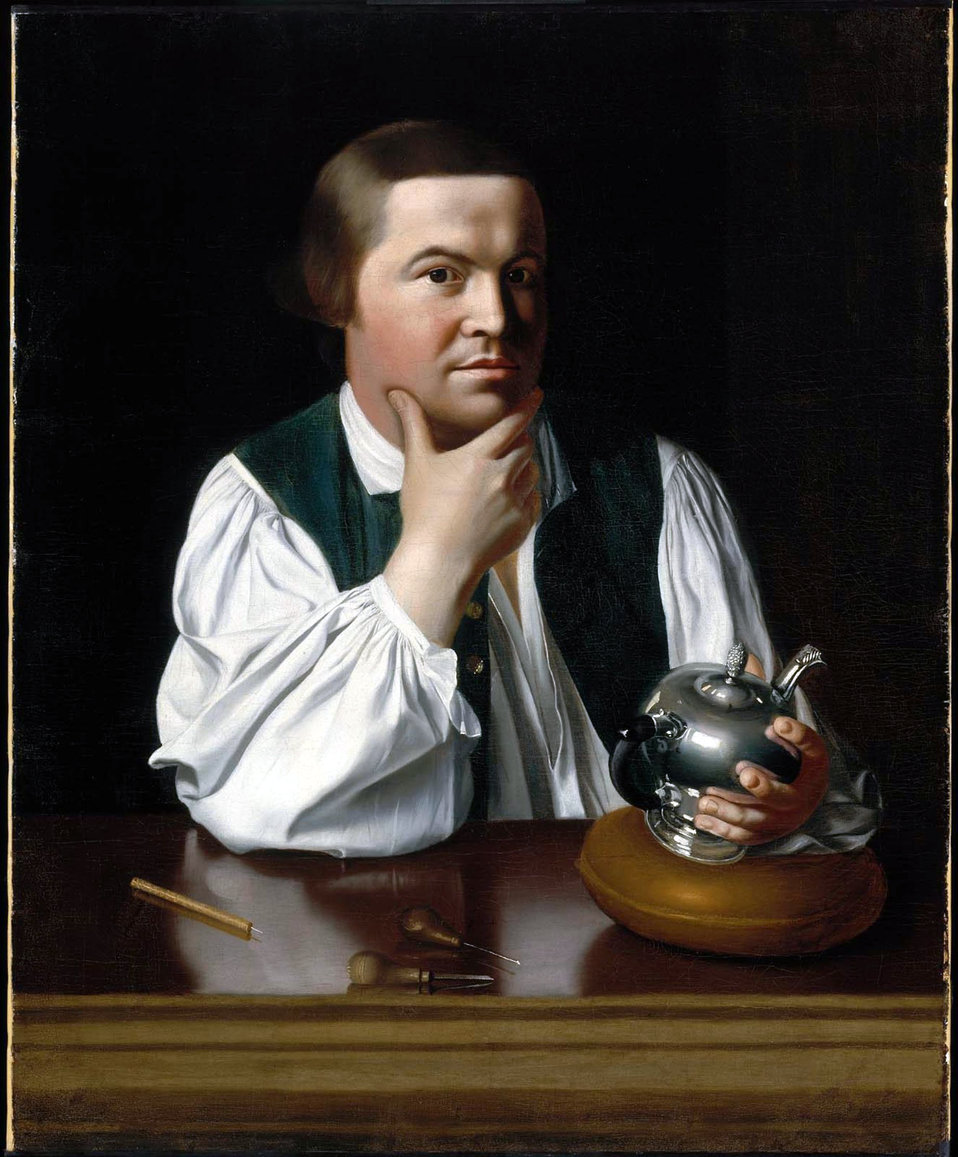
J S Copley - Paul Revere